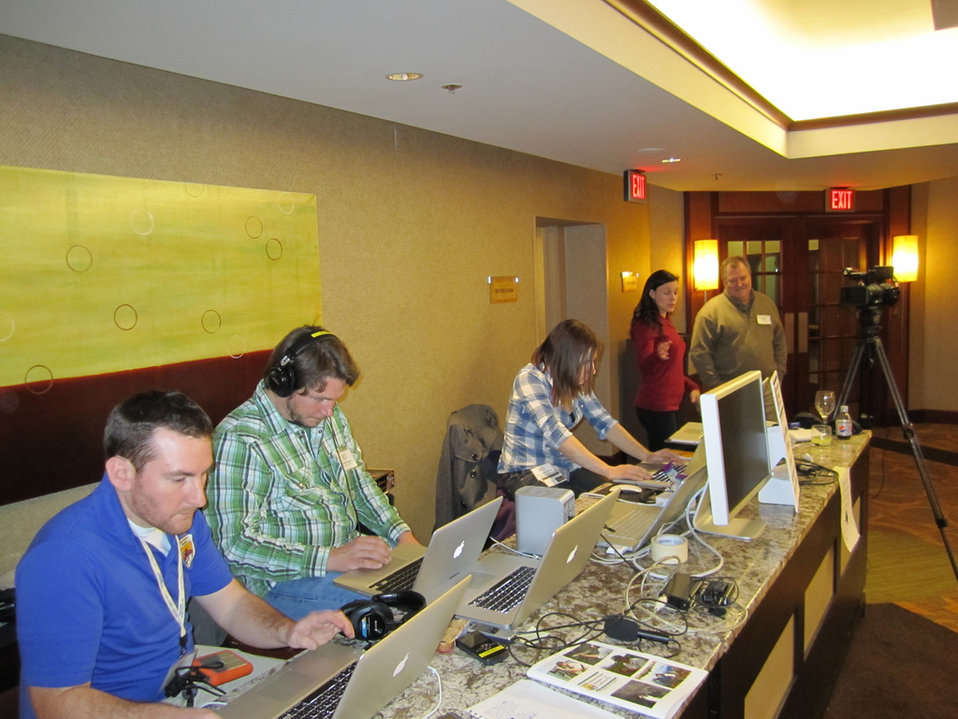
External Affairs Team

The External Affairs team at their video production and social media station at the Northeast Region Biologists Conference.